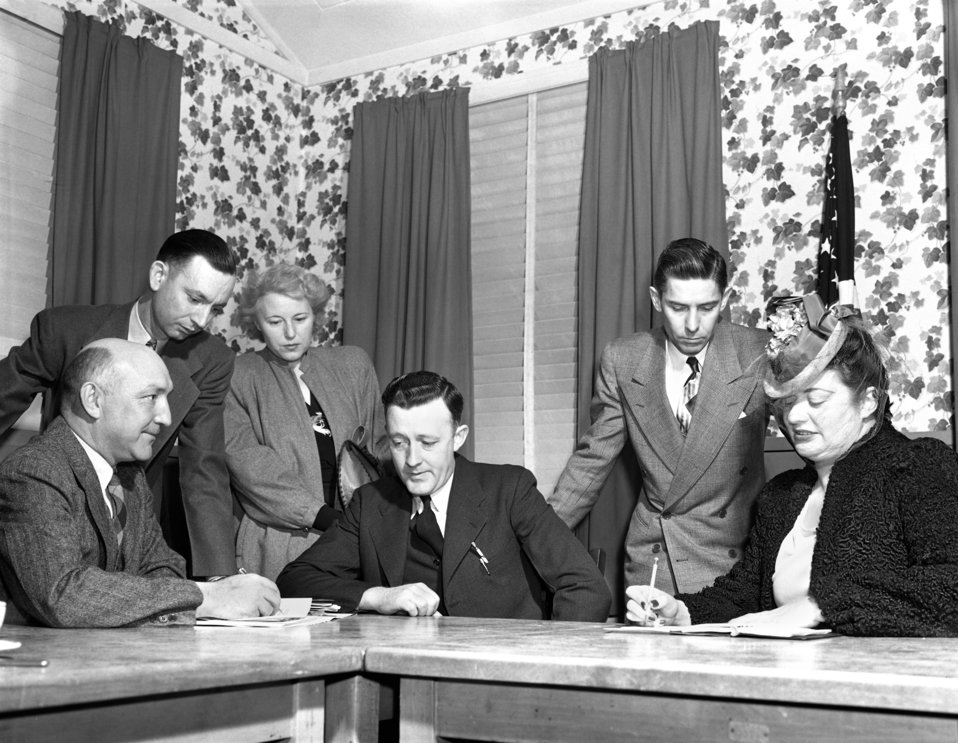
Merchants Metting Oak Ridge 1947

3325-1 DOE photo Ed Westcott 2-1947 Oak Ridge Tennessee